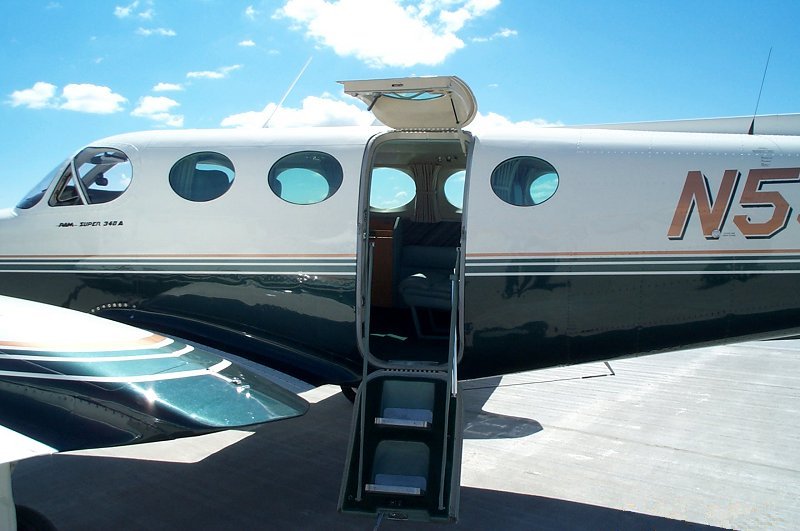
Cessna 340A